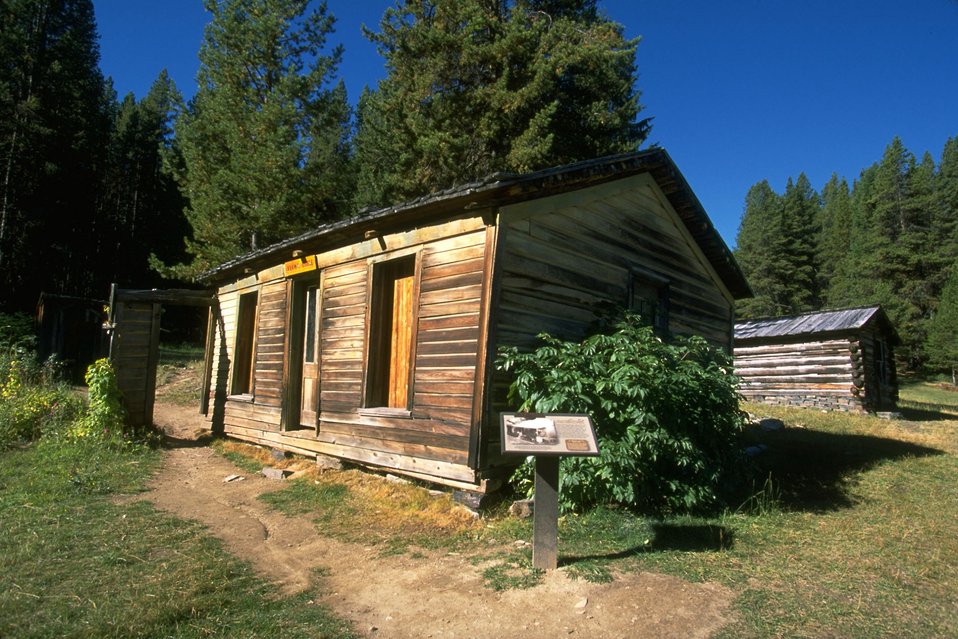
Adams house in Garnet Ghost Town